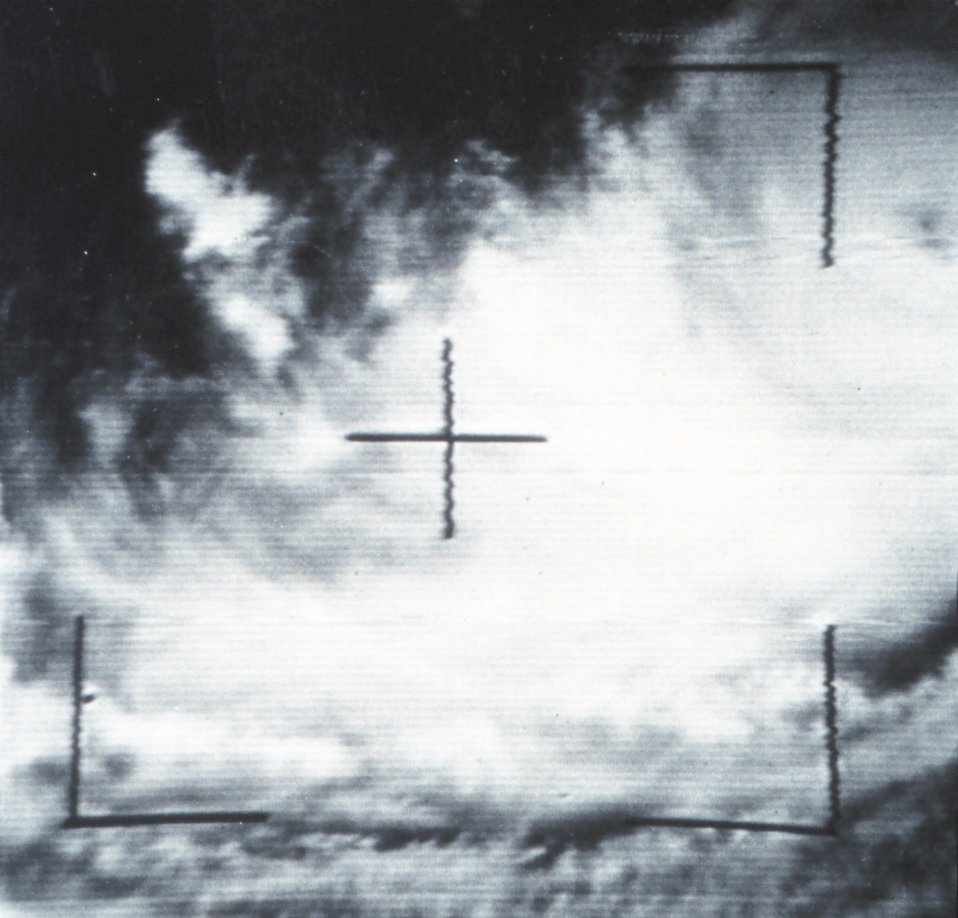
Hurricane Betsy as photographed from TIROS VII. TIROS VII was on its 11,994th orbit at this time. It was launched on June 19, 1963.